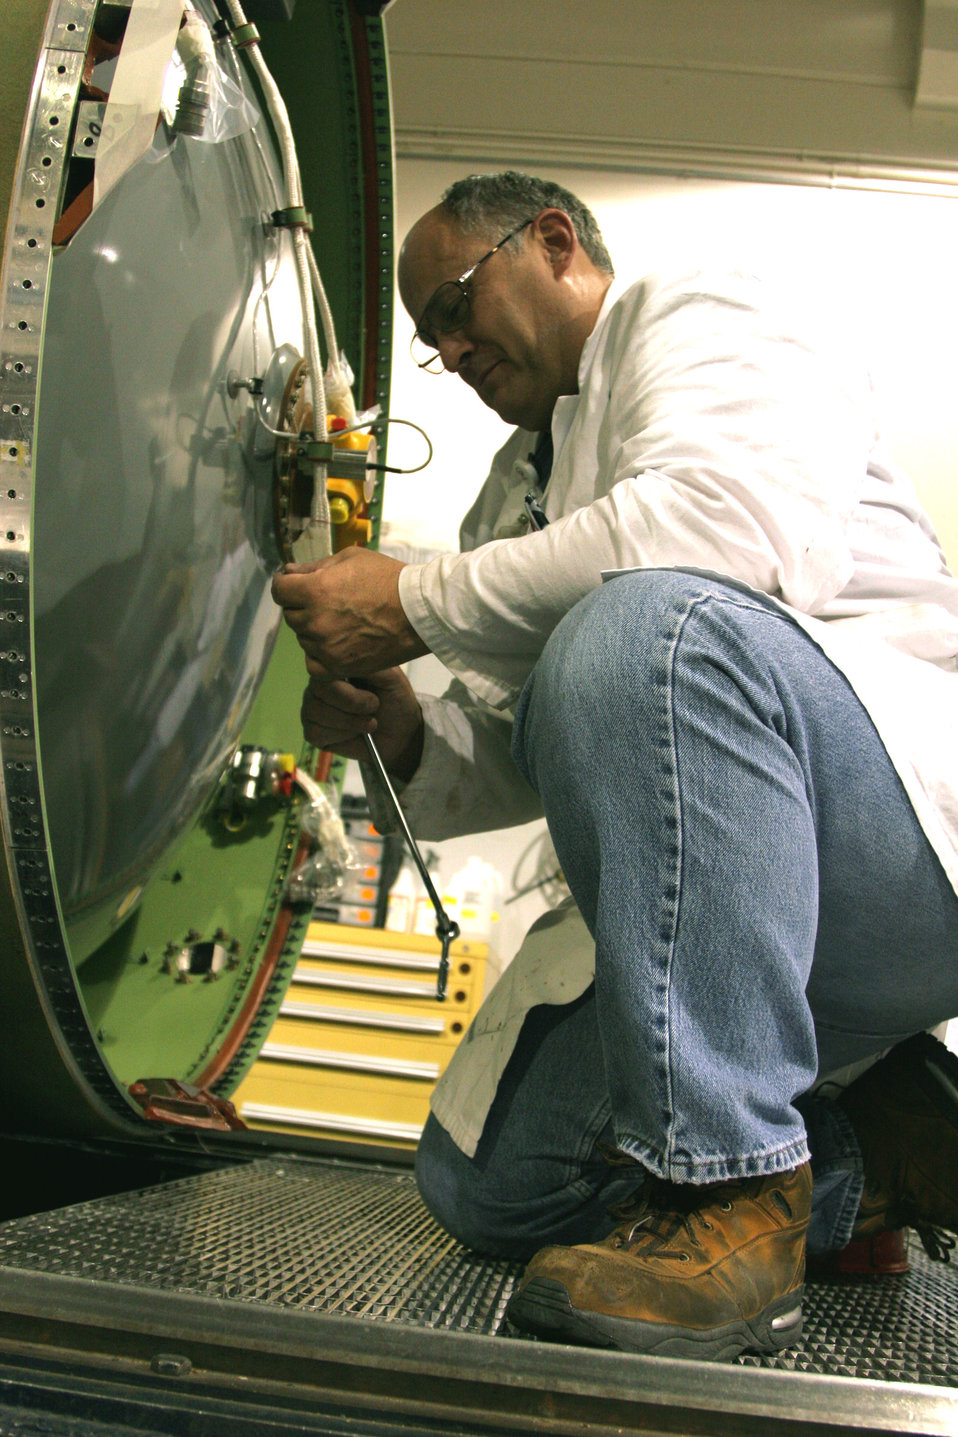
Maintenance mechanic

HILL AIR FORCE BASE, Utah (AFPN) -- Greg House inspects the first stage safe-and-arm device. Mr. House is an ordnance equipment mechanic inthe 309th Missile Maintenance Group.